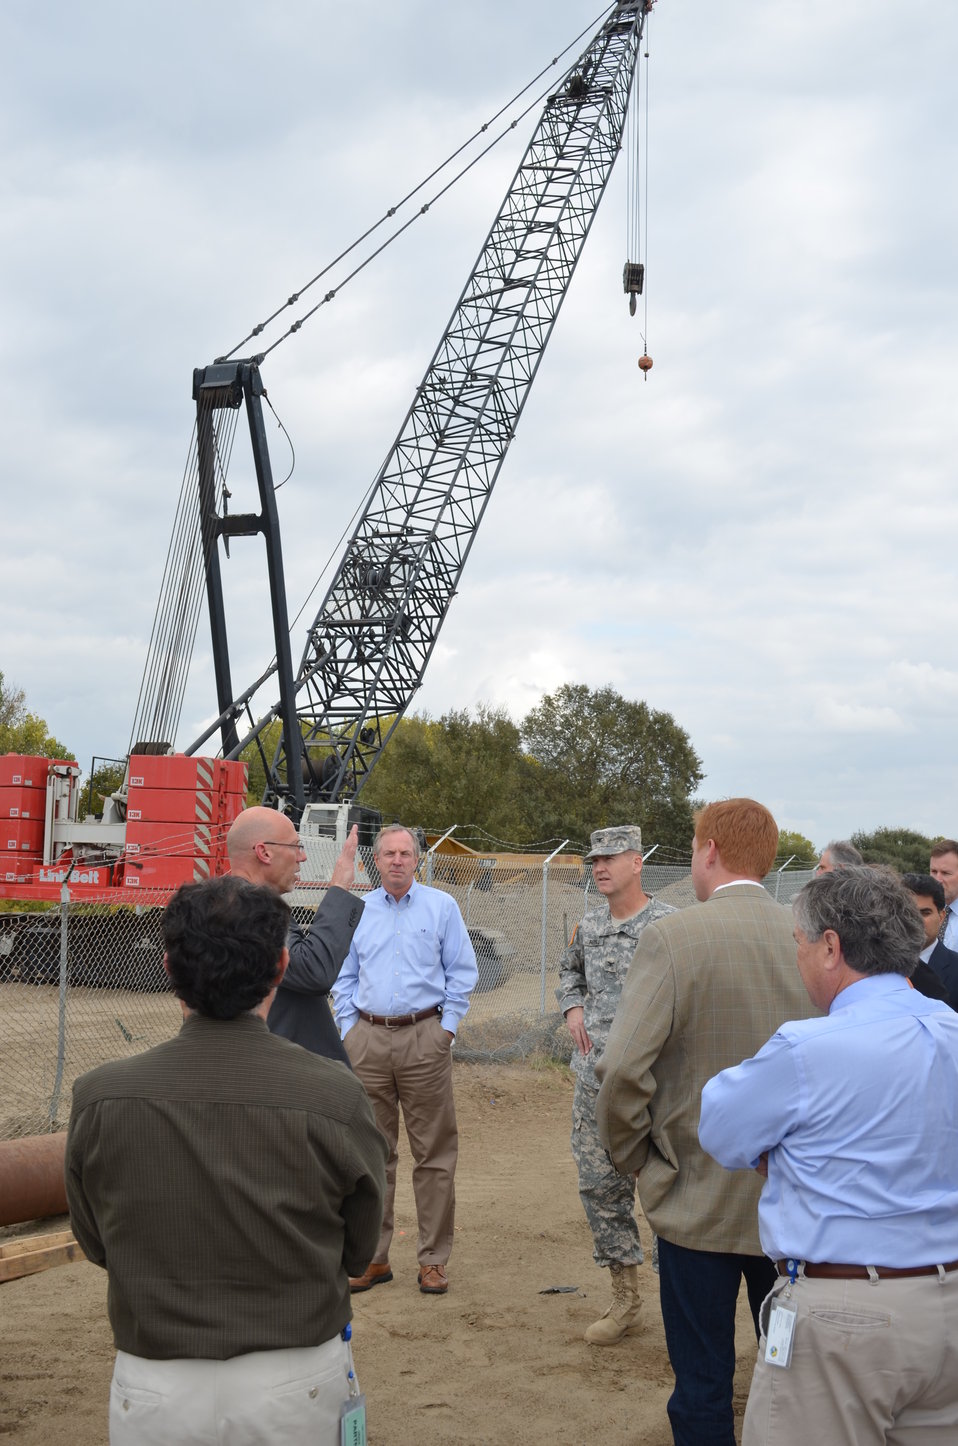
Col. Farrell tours West Sacramento projects

U.S. Army Corps of Engineers Sacramento District staff including the commander, Col. Michael Farrell (center), and Tambour Eller, deputy district engineer for programs and project management, toured a series of construction projects and the Port of Sacramento with City of West Sacramento and California Department of Water Resources staff Oct. 29, 2013.